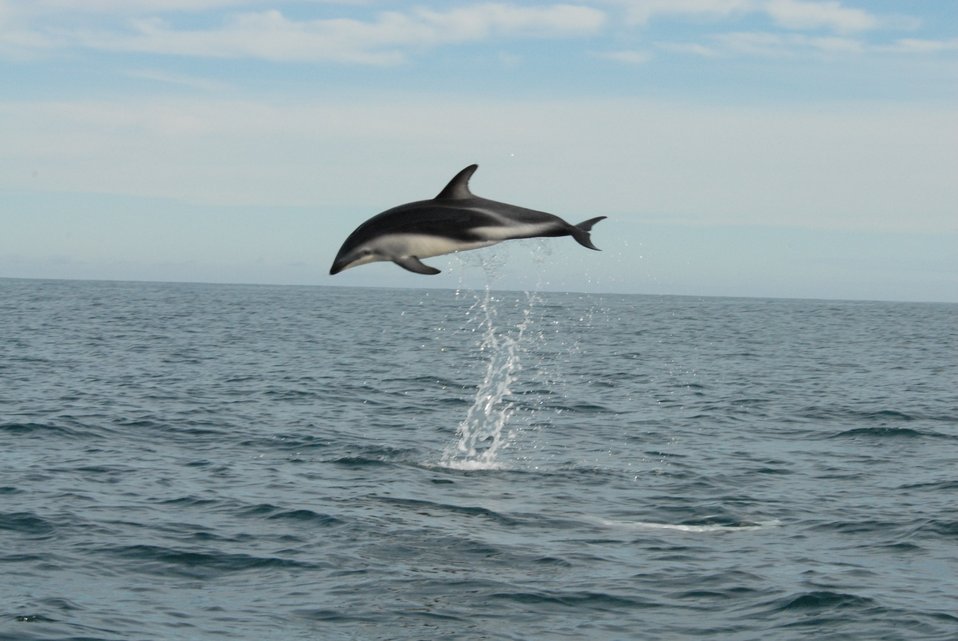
Dusky dolphin (Lagenorhynchus obscurus)